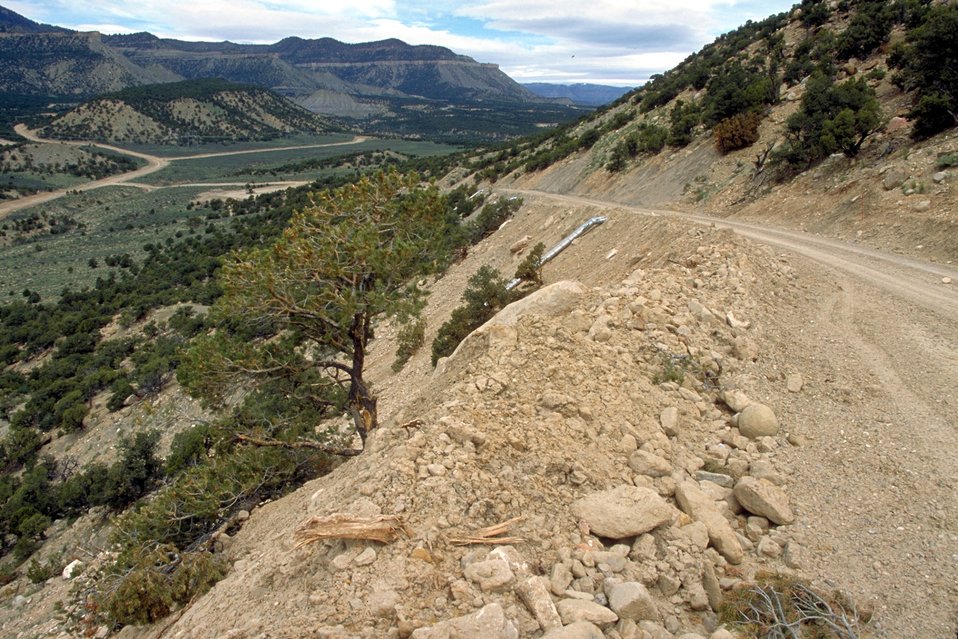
Overlooking coal bed methane production units near Price, Utah.